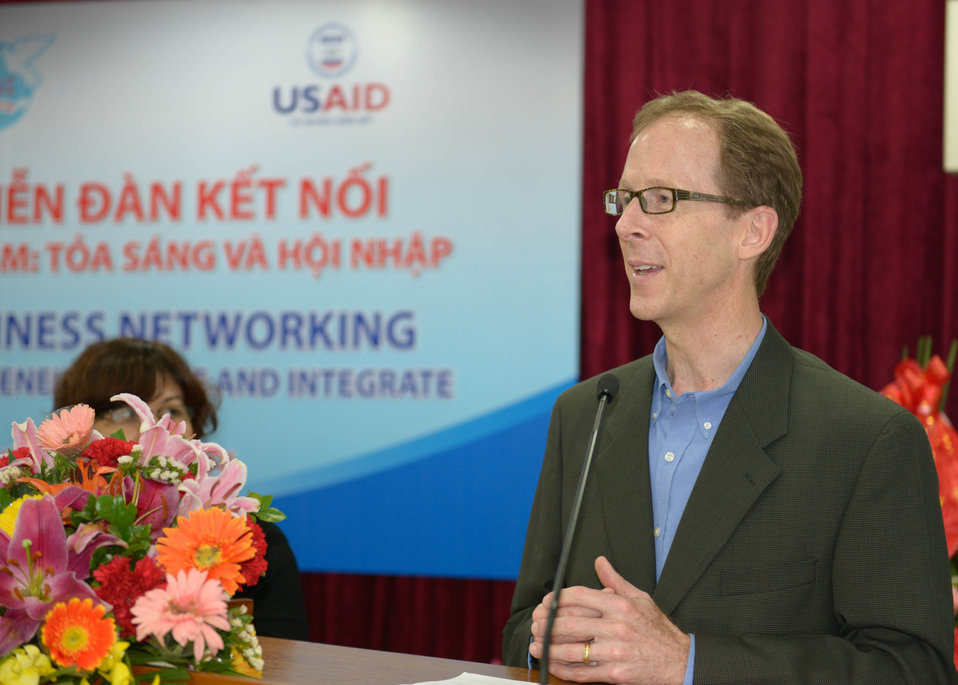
USAID Vietnam Mission Director, Joakim Parker, speaks at the seminar for female entrepreneurs

Phu Tho, Vietnam. March 1, 2014.